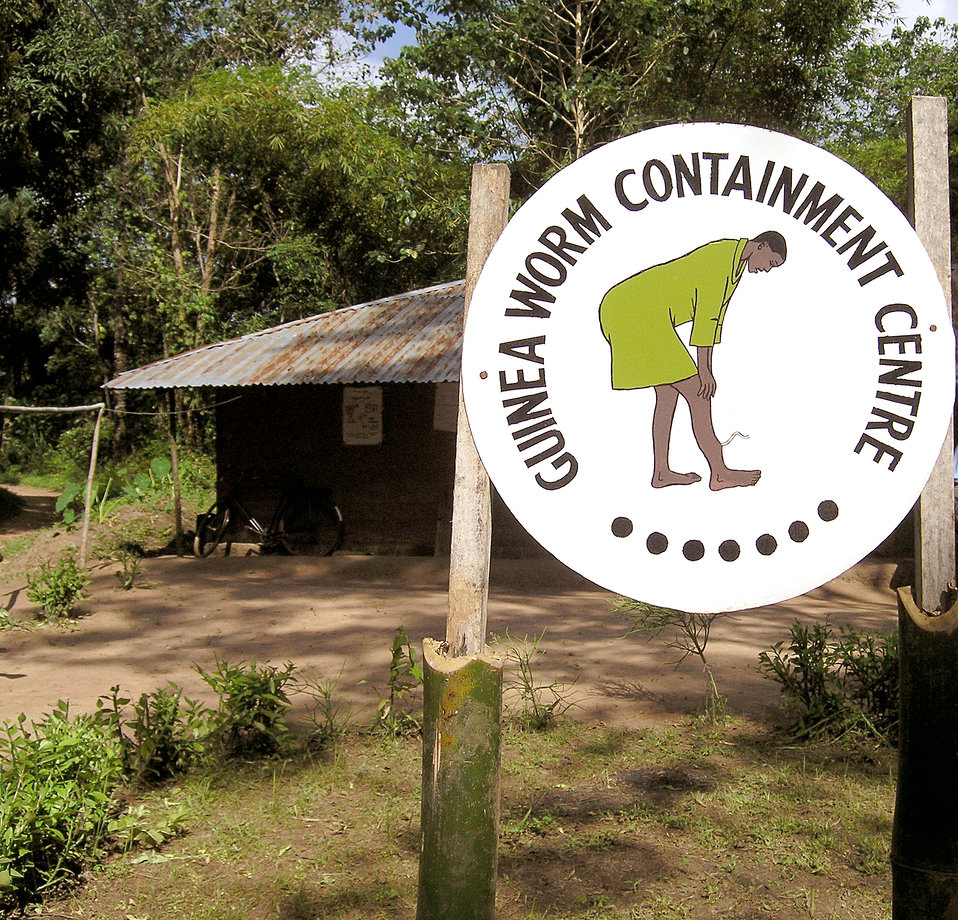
This 2004 photograph depicted the entrance to a Nigerian Guinea worm containment center. The sign at the entrance displayed a drawing of a Guinea worm sufferer. The worm, Dracunculus medinensis, is shown emerging from the patient's lower leg, and if you look closely, the site of emergence is swollen due to the accompanying infection that usually ensues. These treatment centers not only care for a Guinea worm patients, but educates the sufferers as to how one goes about avoiding the infection in the first place. It's as simple as filtering ones drinking water, thereby, removing the indigenous copepods, which act as the hosts for the D. medinensis larvae, and which act to introduce the parasites into one who drinks the water.